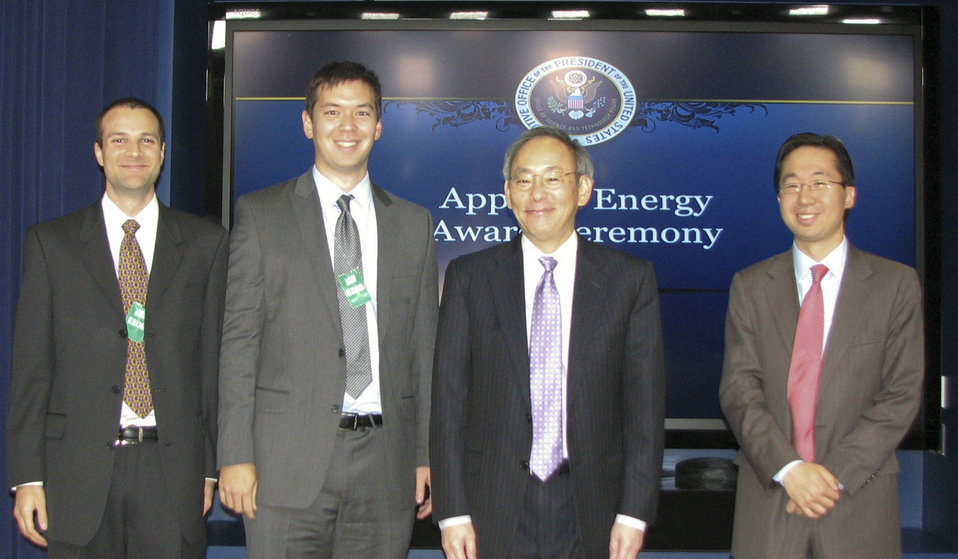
Secretary Chu, U.S. CTO Todd Park, and Leafully